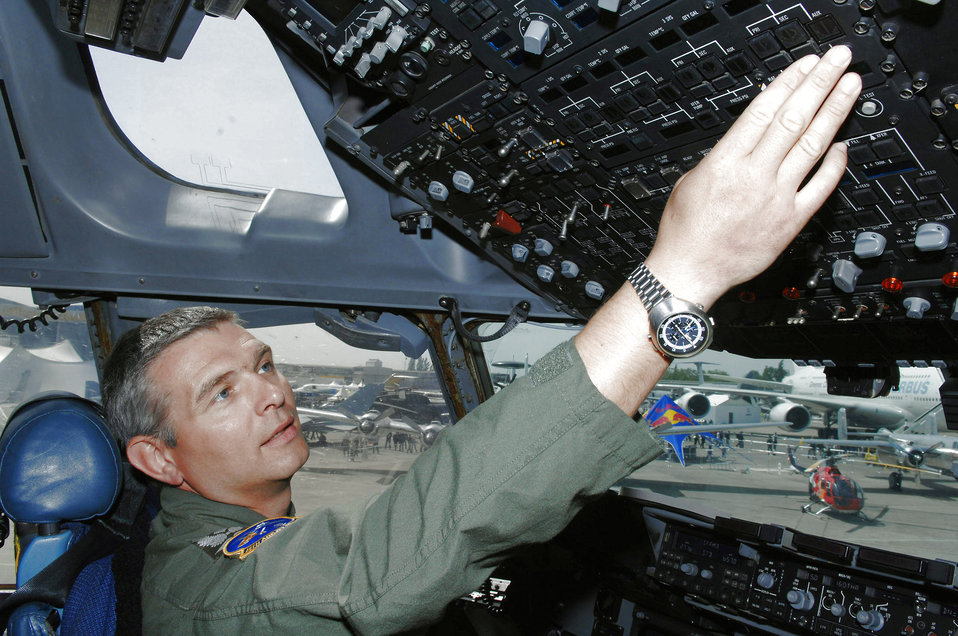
US-German exchange pilots showcase interoperability

Lt. Col. Marc Beutler, a German air force exchange pilot assigned to the U.S. Air Force, conducts post flight checks on the